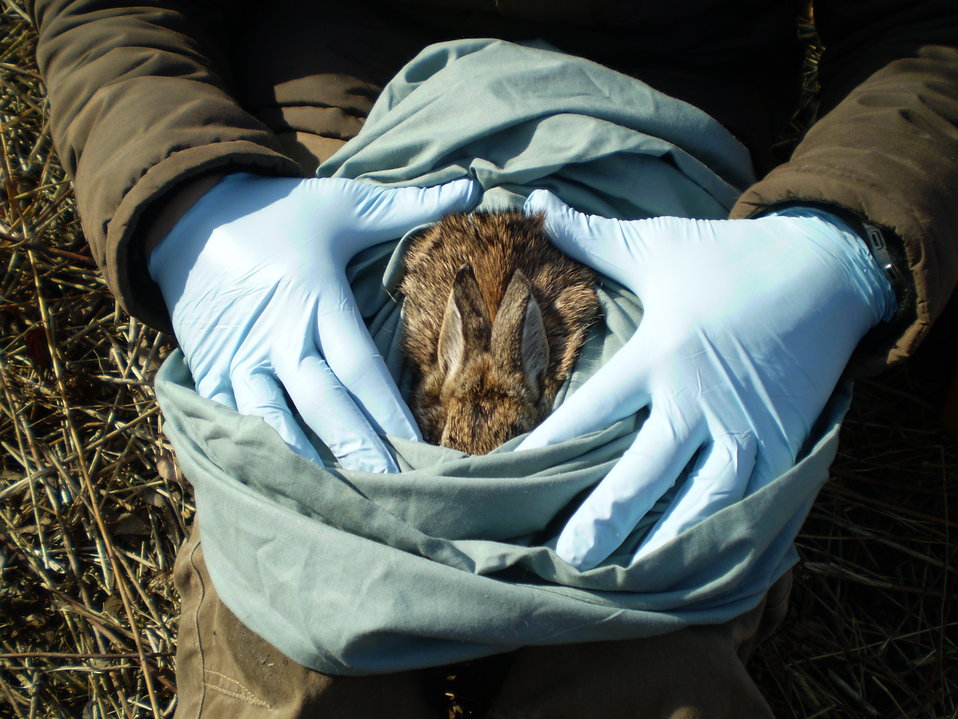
Finding New England cottontails

A cottontail that was trapped and is being quickly processed before being released back into its home.